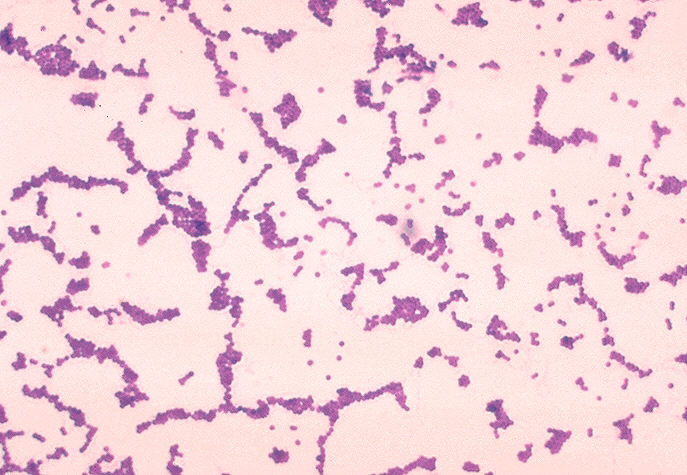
Enterococcus sp. bacteria.